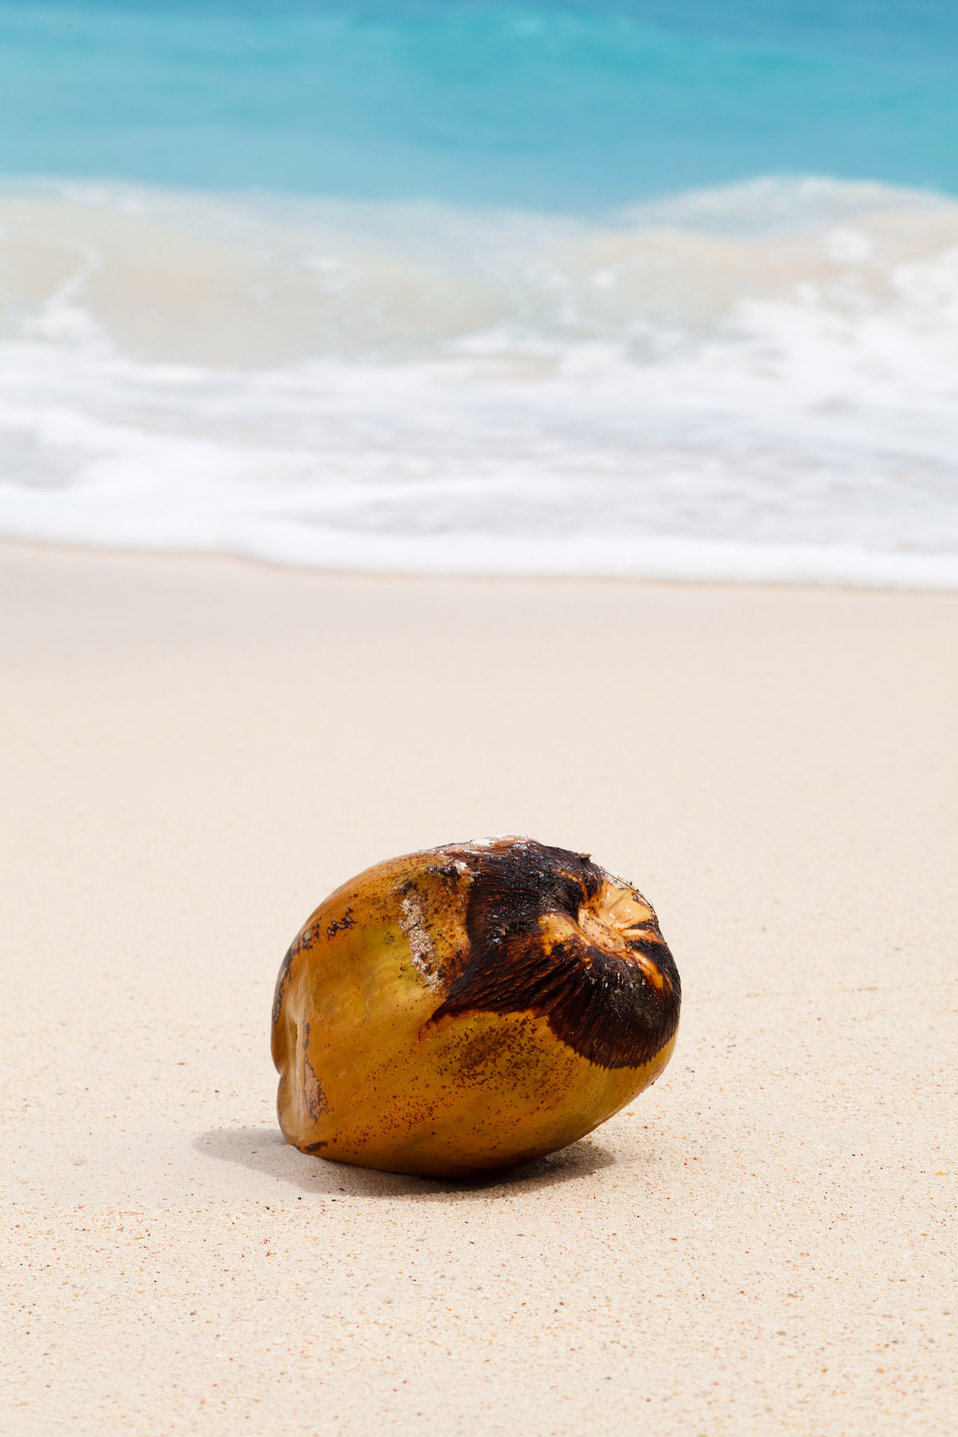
Coconut in sand

Coconut on beach in sand.